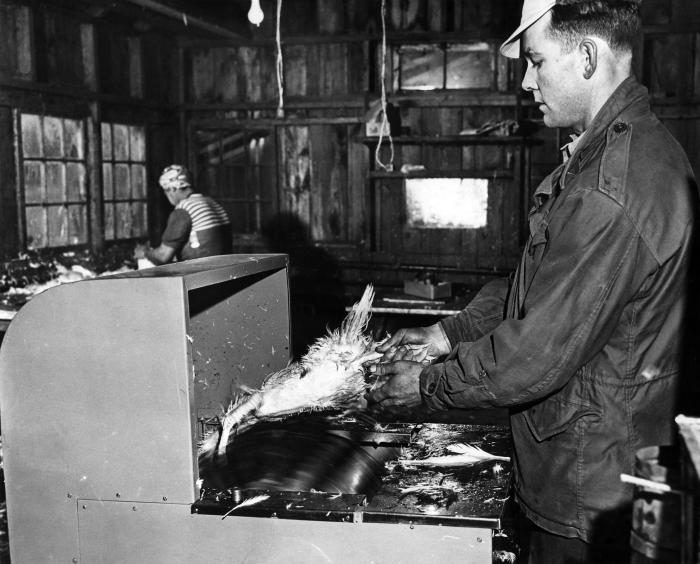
This historic image, provided by the Center for Disease Control's (CDC), National Institute for Occupational Safety and Health (NIOSH), depicted an agrigulture industry Eastport, Long Island, New York factory worker, who was in the process of plucking feathers from a chicken while stationed at a feather-plucking machine. The image was published in the August, 1948 issue of the 'Industrial Bulletin, New York', Pg. 3, and you'll note that the worker was not wearing gloves, nor was he sporting any filtered breathing devices, both of which would have protected him from possible blood-borne or airborne pathogens, or allergensIn gaining a better understanding of workplace hazards, through hands-on and on-site information acquisition, protocol-formulating bodies such as NIOSH, are better able to create a safer workplace through substantiation of appropriate safety regulations.